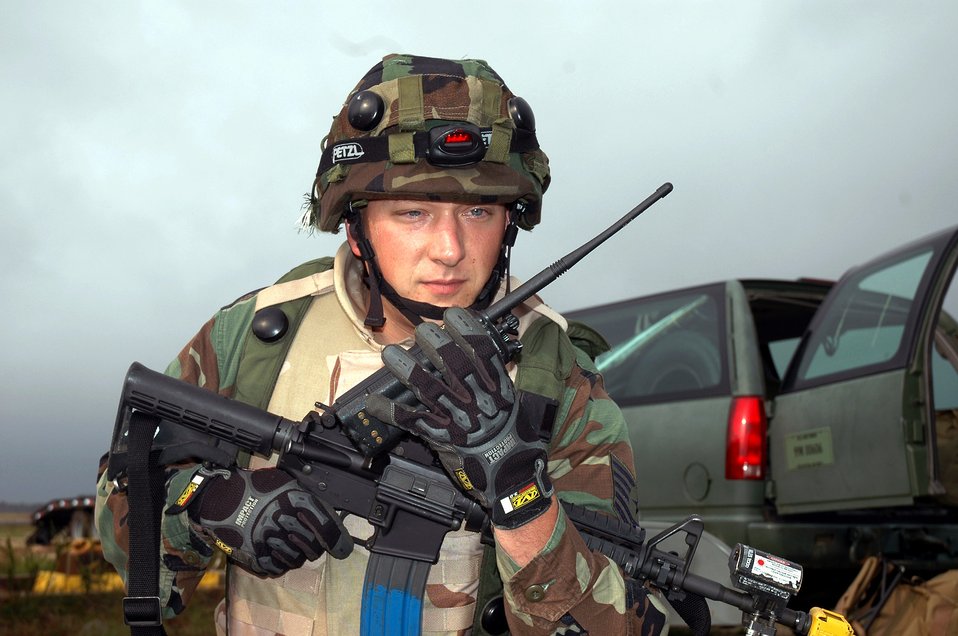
Eagle Flag preps Airmen for combat

Tech. Sgt. Matthew Marcinkowski calls on the radio while watching over an entry control point to his camp area during operations for Exercise Eagle Flag 07-1 Oct. 12 at Naval Air Engineering Station Lakehurst, N.J. Sergeant Marcinkowski was one of eight people on an advance team setting up operations for Eagle Flag. The exercise is controlled and operated by the Air Mobility Warfare Center's 421st Combat Training Squadron and tests and trains Airmen in expeditionary combat support skills. Sergeant Marcinkowski is a civil engineer assistant with the 817th Contingency Response Group at McGuire Air Force Base, N.J.